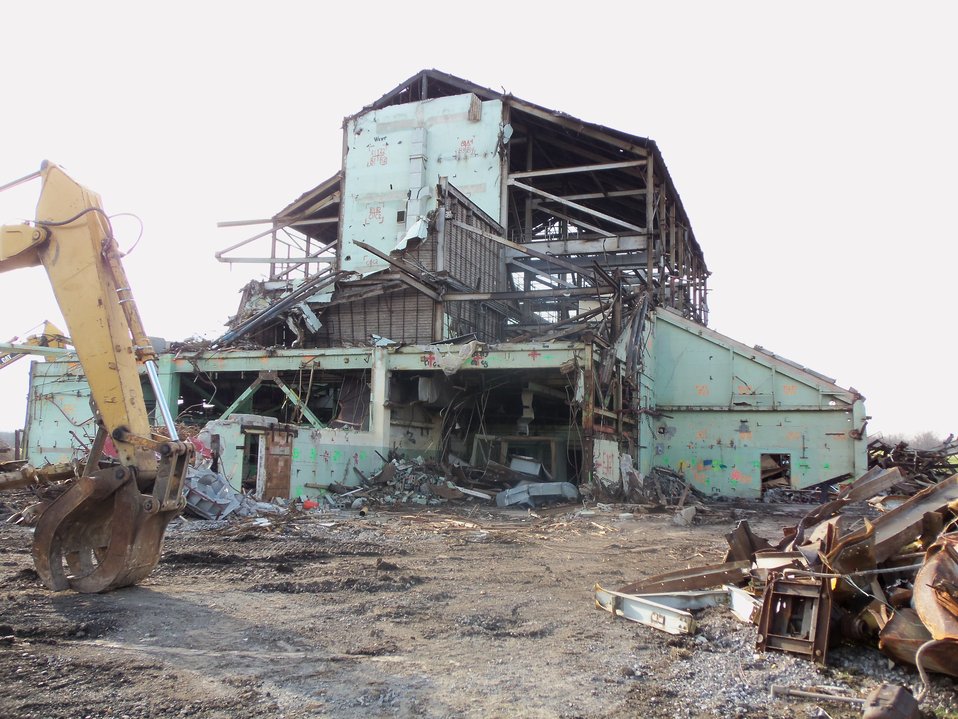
BLDG 401 SHELL AND DEBRIS

Activities from the Niagara Falls Storage Site, which is associated with the former Lake Ontario Ordnance Works. Formerly Utilized Sites Remedial Action Program (FUSRAP), a program initiated in 1974 to identify, investigate and clean up or control sites that were part of the Nation's early atomic energy and weapons program. Activities at the sites that are eligible for FUSRAP were conducted by Manhattan Engineer District (MED) or the Atomic Energy Commission (AEC), both predecessors of the Department of Energy (DOE). The U.S. Army Corps of Engineers was assigned management of FUSRAP by Congress in 1997.